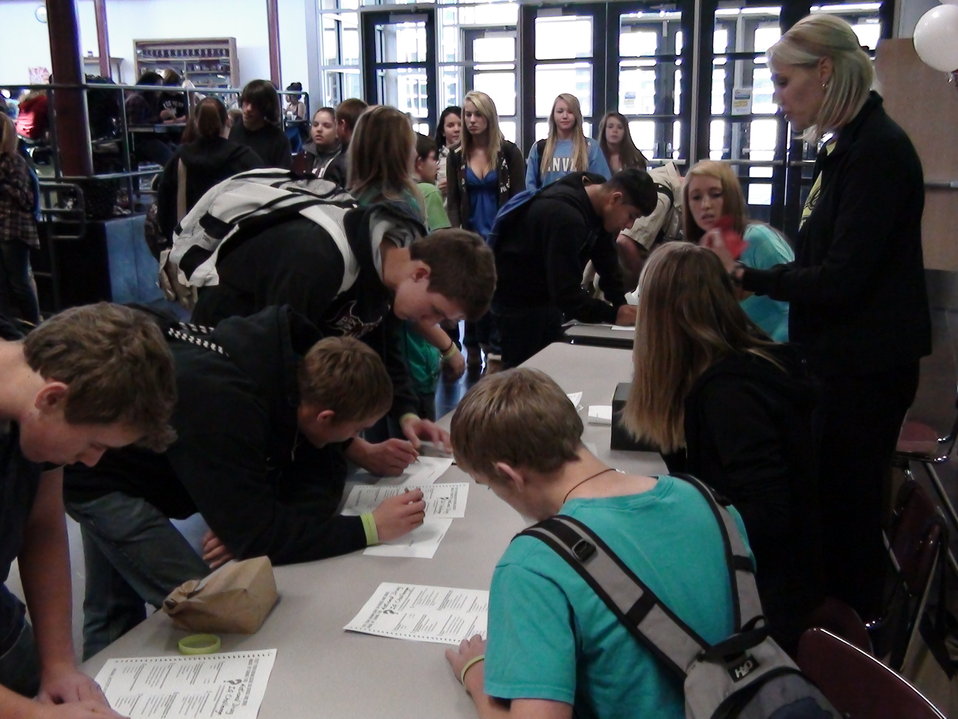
Golden High School NDFW Event

Students taking the Drug IQ Challenge at Golden High School following the school's assembly and proclamation.